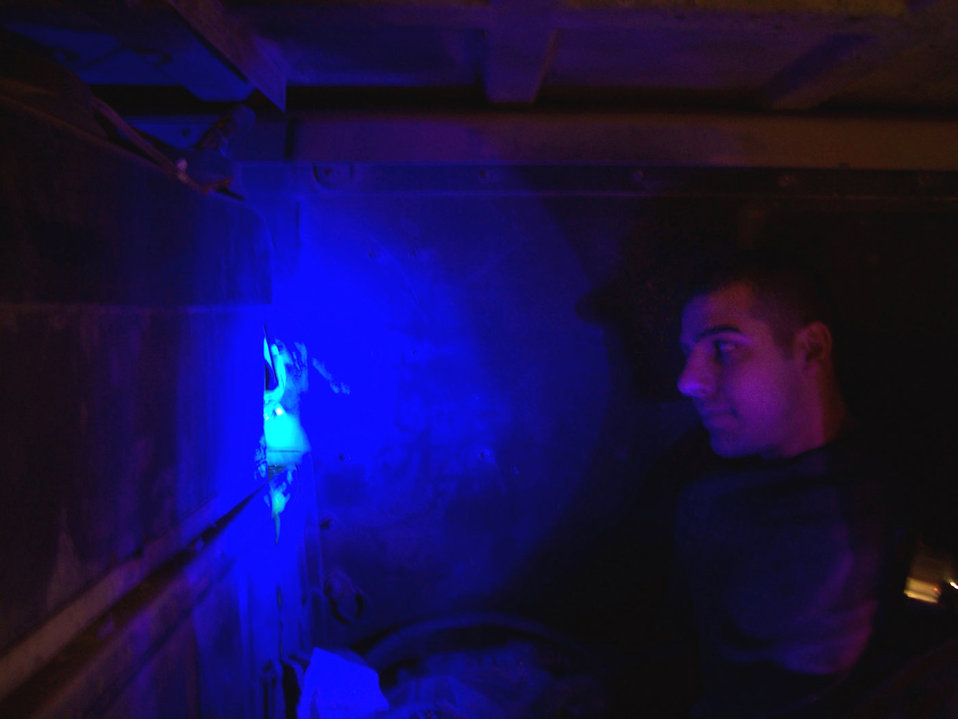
Mechanics keep war effort rolling

BAGHDAD, Iraq -- Staff Sgt. Dustin Barnhardt uses a special dye and infrared light to find an air-conditioning leak on a Humvee here. He is a vehicle mechanic with the 447th Expeditionary Logistics Readiness Squadron and is deployed from Kadena Air Base, Japan.